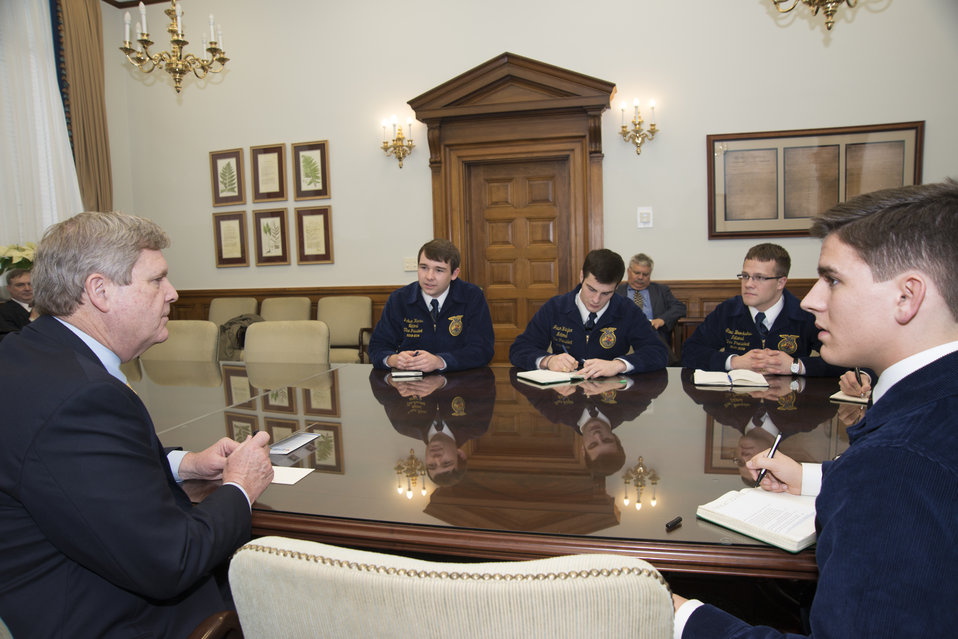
Agriculture Secretary Tom Vilsack meets with National FFA officers at the U.S. Department of Agriculture (USDA), Whitten Building in Washington, DC, on Wednesday, Jan.15, 2014. (L to R Southern Region Vice President Jackson Harris, Western Region Vice President Jason Wetzler, Central Region Vice President Steven Brockshus, and Secretary Mitch Baker).